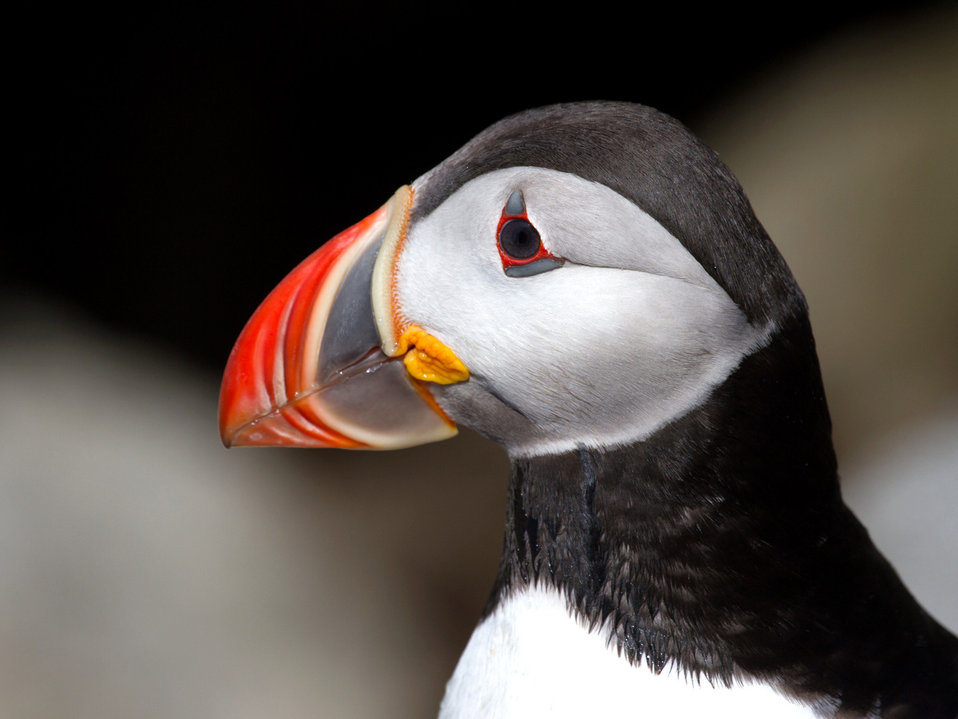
Atlantic puffin

Photographed at Petit Manan National Wildlife Refuge.